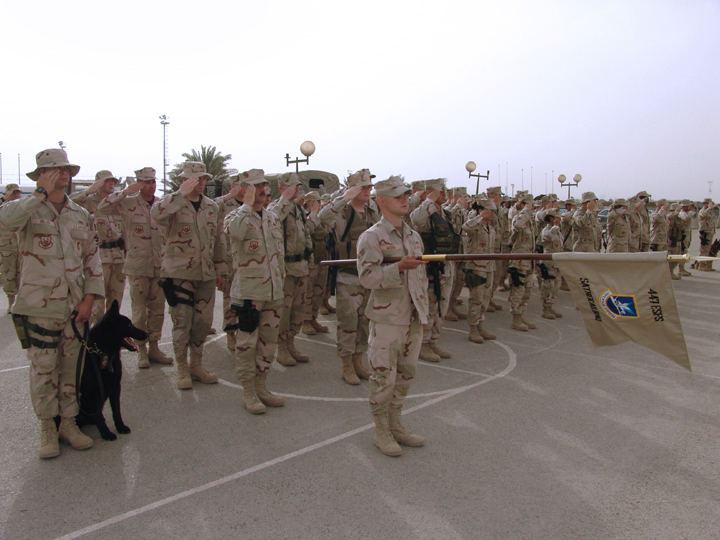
Deployed Airmen honor fallen police officers

BAGHDAD, Iraq -- Airmen with the 447th Air Expeditionary Group's security forces flight pay tribute to fallen comrades during a ceremony here May 13 observing Peace Officers Memorial Day.